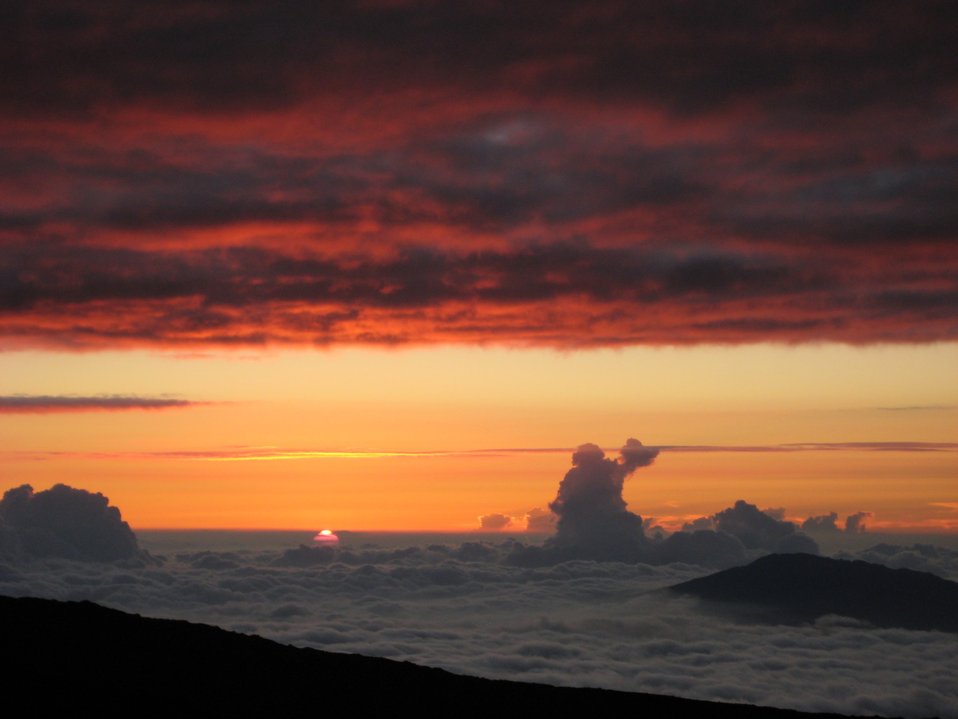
Looking NW from the Mauna Loa atmospheric observatory at sunset.